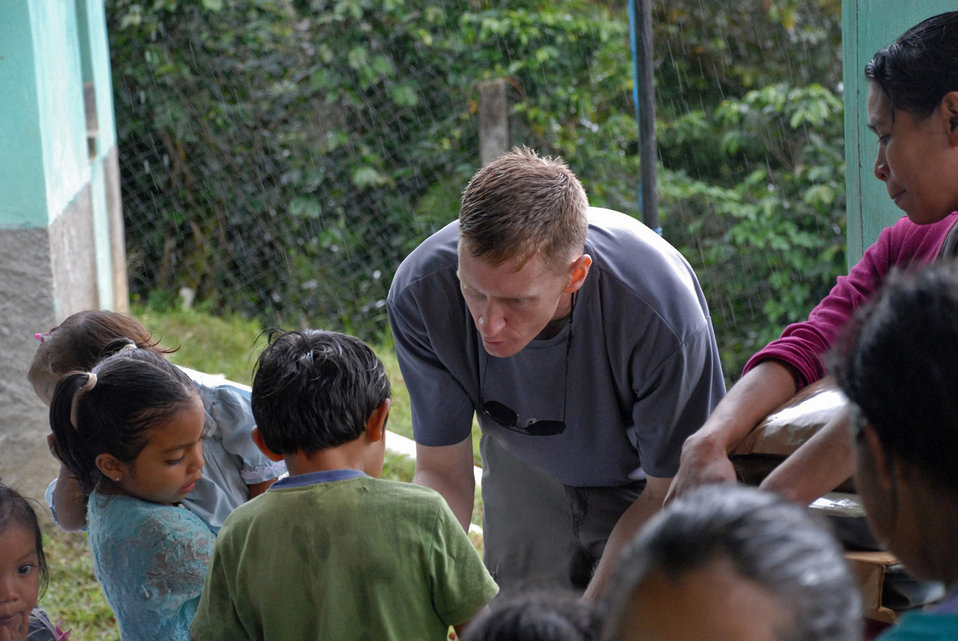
Servicemembers deliver food to Honduran mountain village

Maj. Jason Clark hands food to children Oct. 20 in Bella Vista, Honduras. Major Clark was one of approximately 50 American servicemembers from Joint Task Force Bravo at Soto Cano Air Base, Honduras, who hiked up Comayagua Mountain to bring 450 pounds of food to the residents in remote Bella Vista. The hike was organized by the JTF-Bravo chaplain to support local Hondurans.